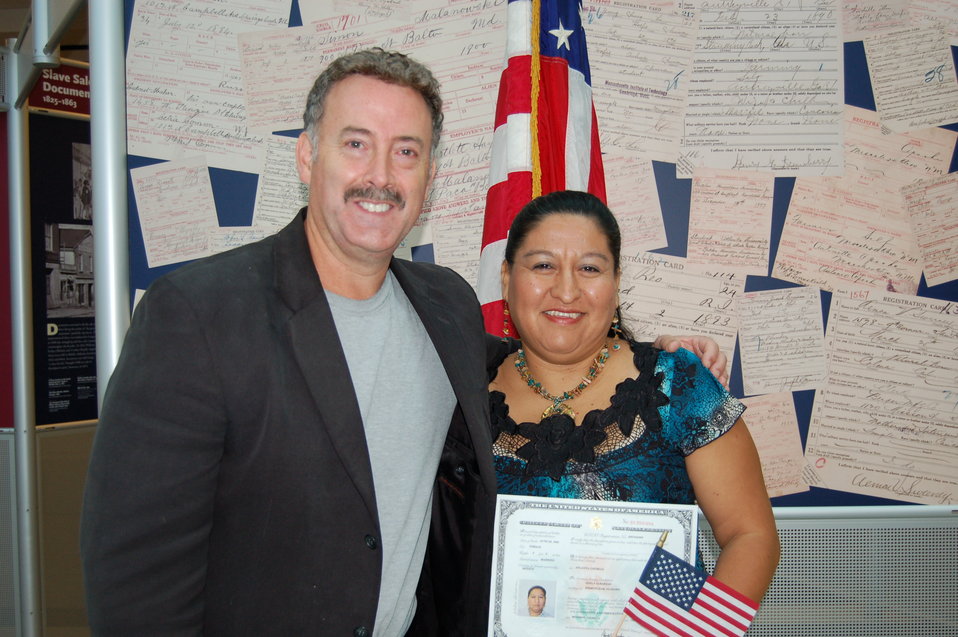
New Citizens